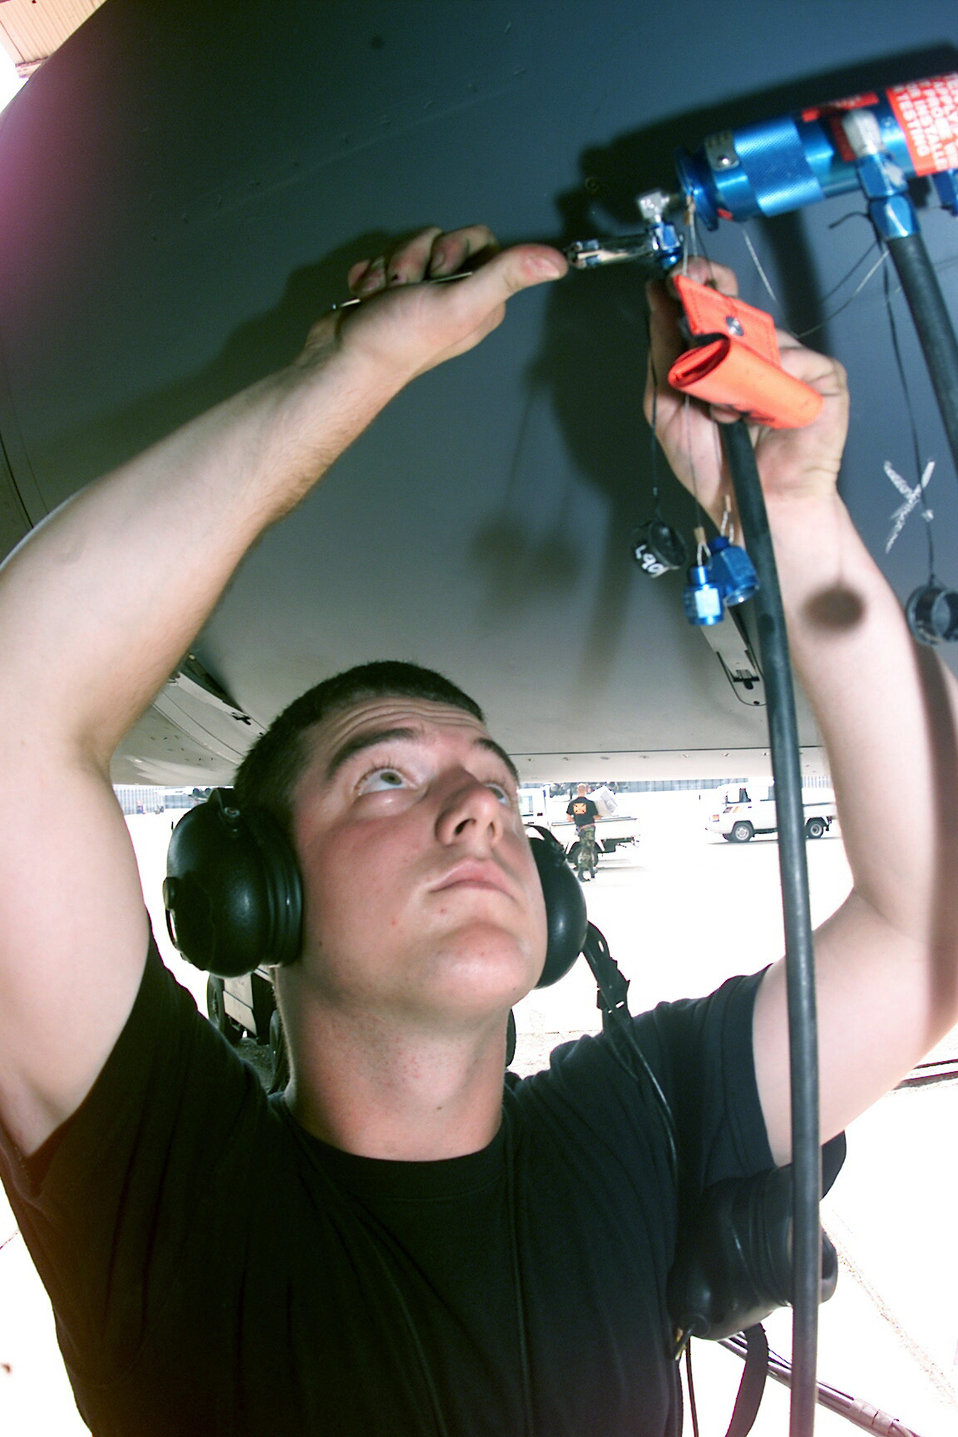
Checking for leaks

GWANGJU AIR BASE, South Korea -- Airman 1st Class Justin Kilgore conducts a static leak check on an F-15E Strike Eagle during a phase inspection here Sept. 8.